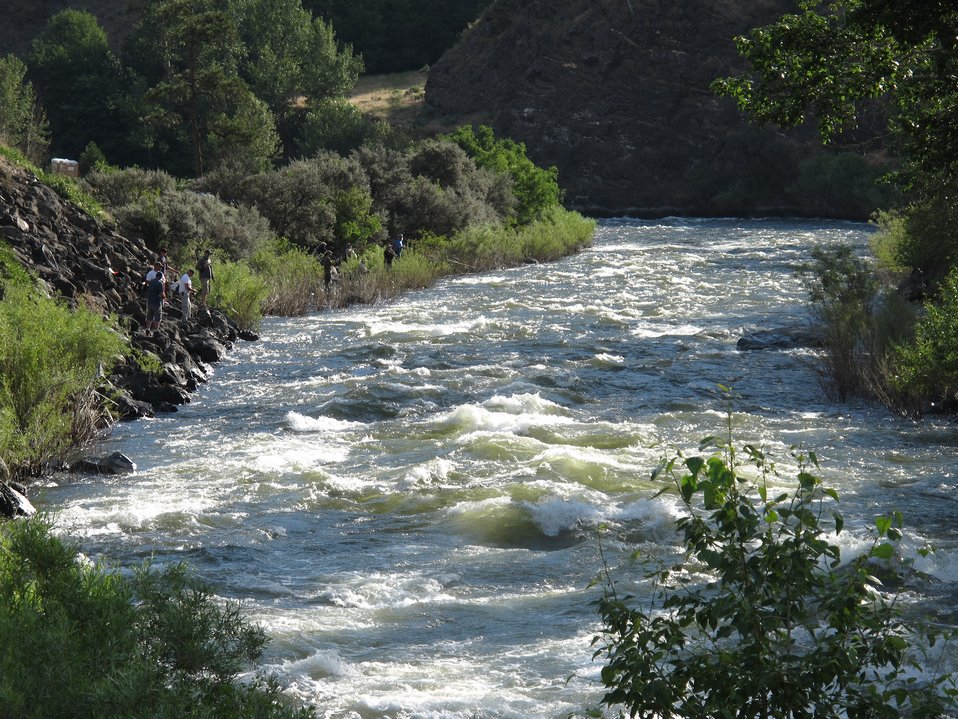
Fishermen line the bank of the Little Salmon River